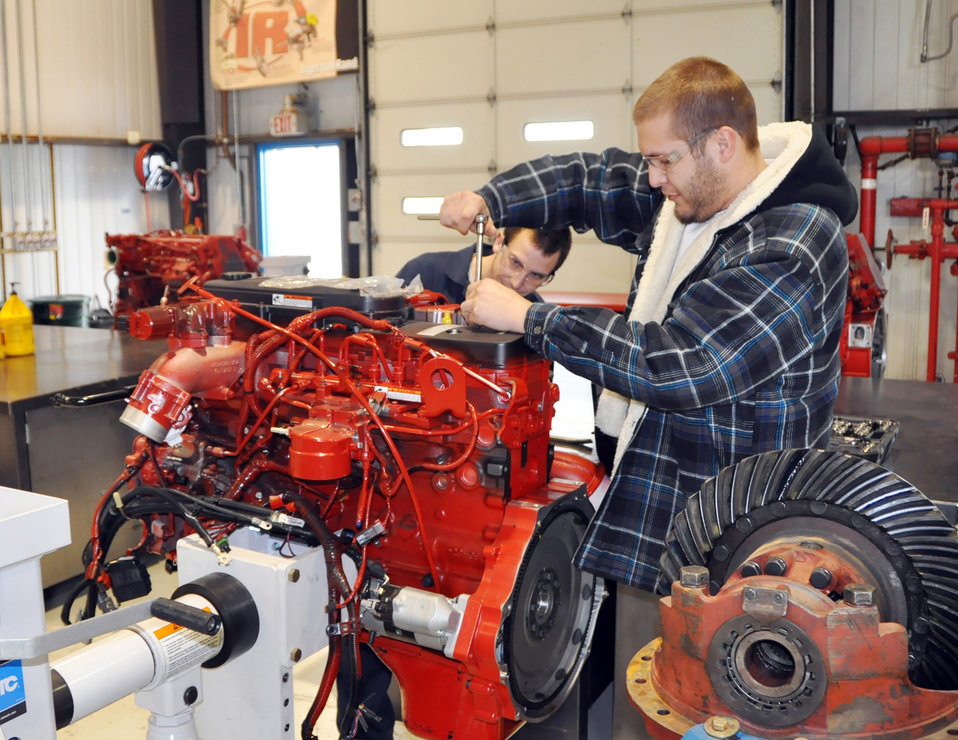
Green businesses

Todd Stretars (rear) and Martin Peck make adjustments to a diesel engine. Both students are enrolled in American River College's clean diesel technology program at the former Mather Air Force Base in Sacramento, Calif.